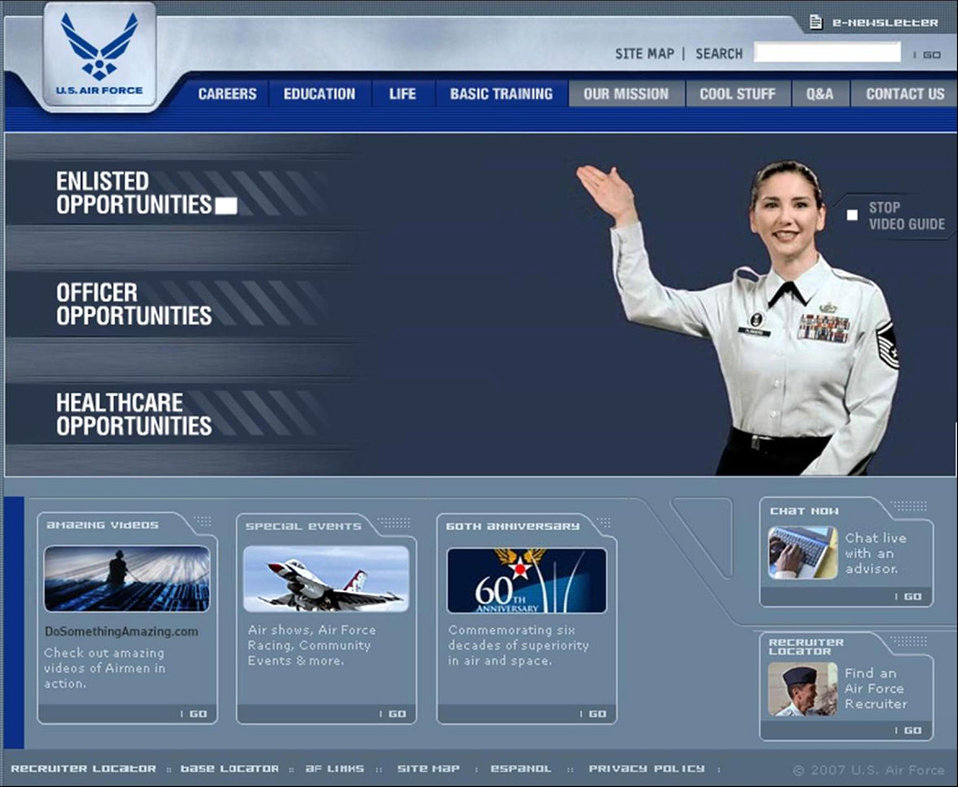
Virtual Tour Guides

Master Sgt. Shiela Flinders, Air Force Recruiting Service Marketing Division broadcaster, serves as one of six virtual tour guides on the home page of the AIRFORCE.com website. The guides are designed to lend a personal touch to a web site loaded with information for prospective recruits, parents, influencers and people wanting to find out more about the Air Force.